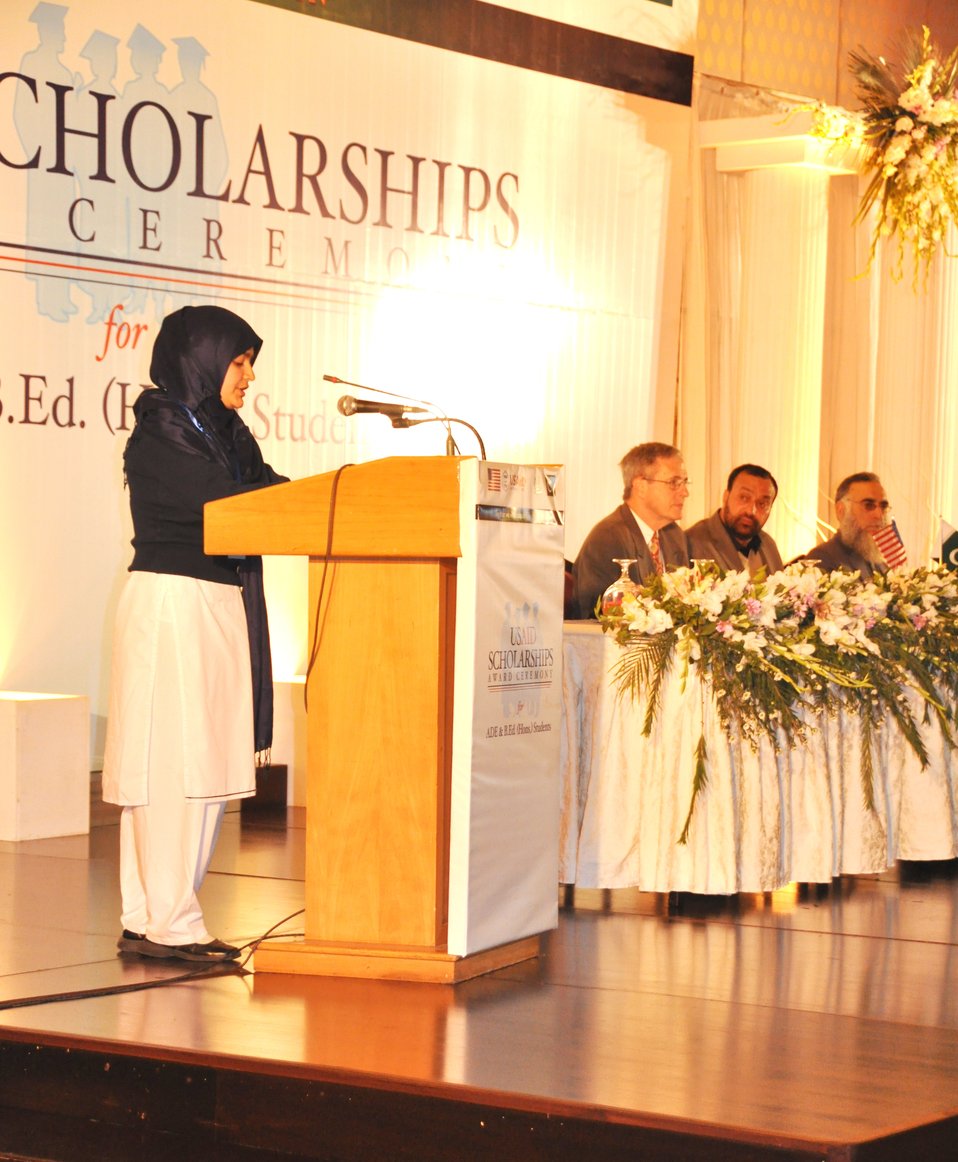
A scholarship recipient while sharing her remarks